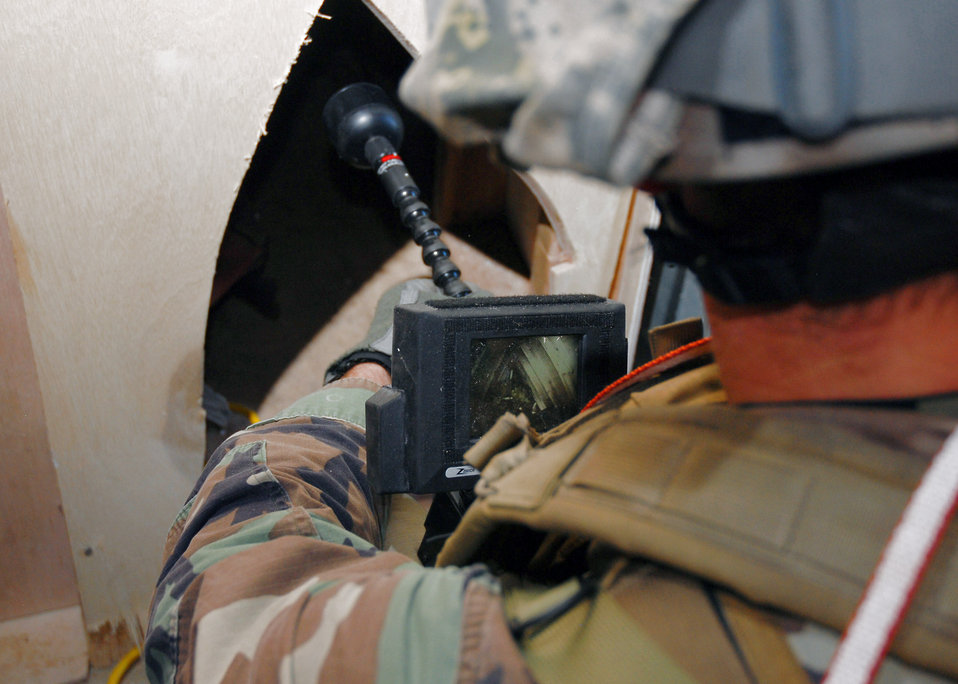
Confined-space training

Capt. Nicholas Shimkus of the 31st Rescue Squadron at Kadena Air Base, Japan, uses a video camera to search inside a narrow space before entering it during confined-space training Oct. 3. The training prepares the rescue Airmen to execute operations in confined spaces and collapsed structures.